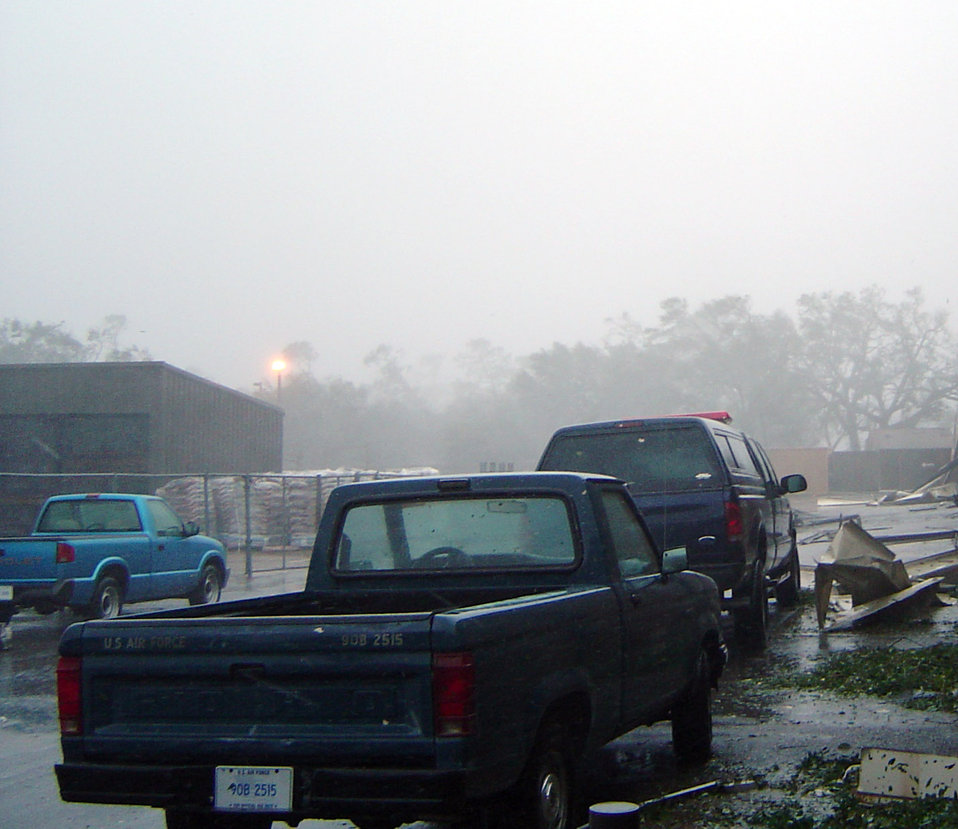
Hurricane Katrina hits Keesler AFB

KEESLER AIR FORCE BASE, Miss. -- Facilities here received extensive damage following a direct hit on the base by Hurricane Katrina. Officials are assessing the damage and are in contact with the Federal Emergency Management Agency.